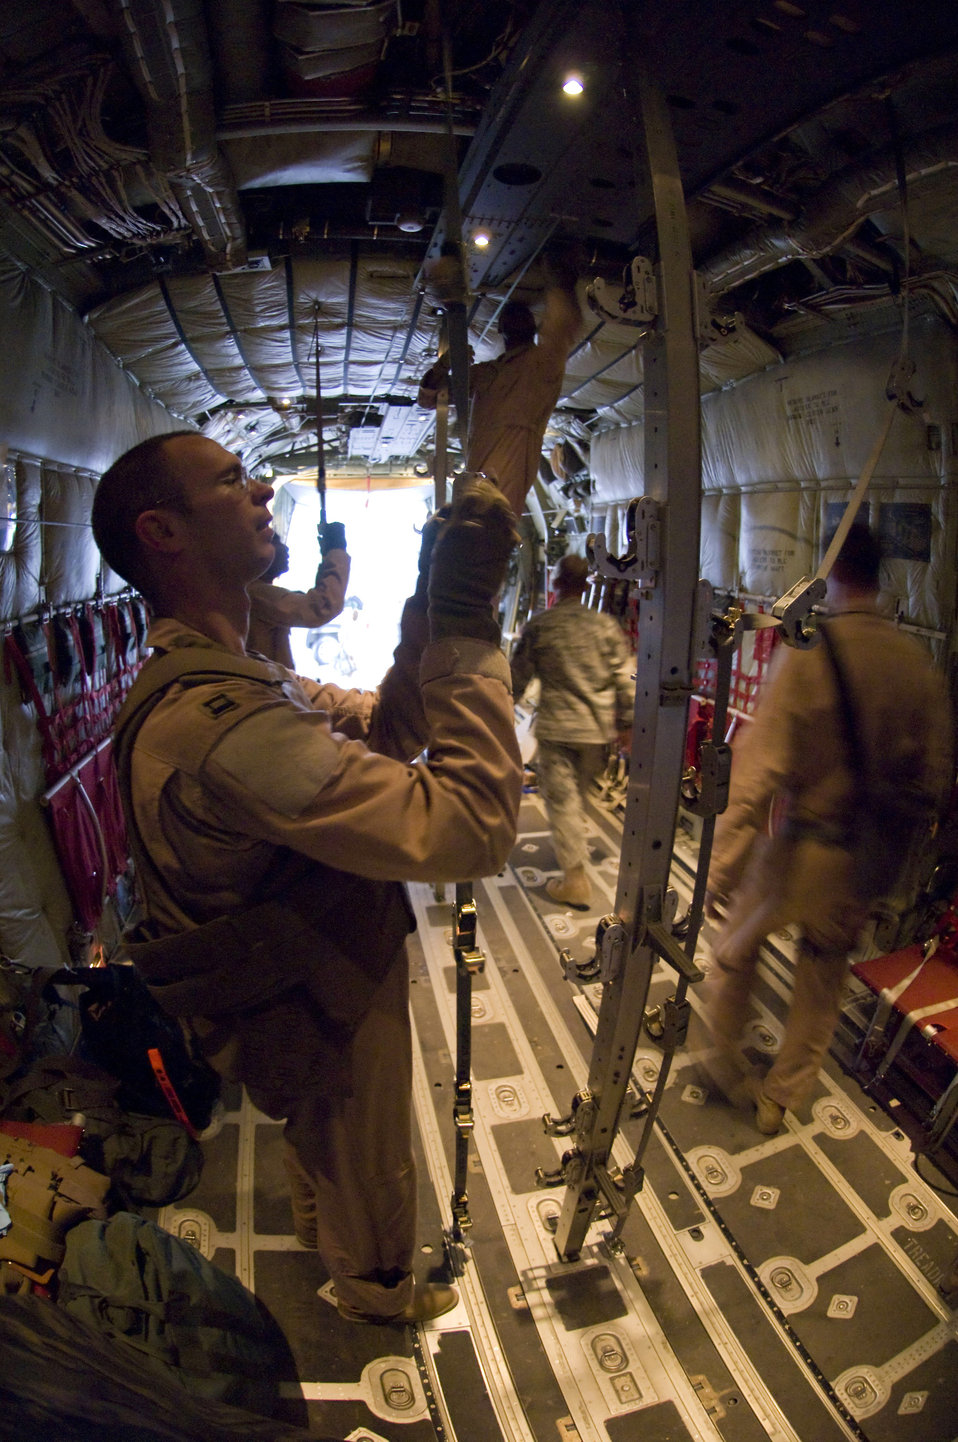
Airframes transform to 'aerovac'

Members of the 455th Expeditionary Aeromedical Evacuation Flight unload a C-130 Hercules July 8 at Bagram Air Field, Afghanistan. The team facilitated the transportation of four patients requiring medical attention to the hospital at Bagram Air Field. All five members of the team are deployed from the 375th Aeromedical Evacuation Squadron at Scott Air Force Base, Ill.